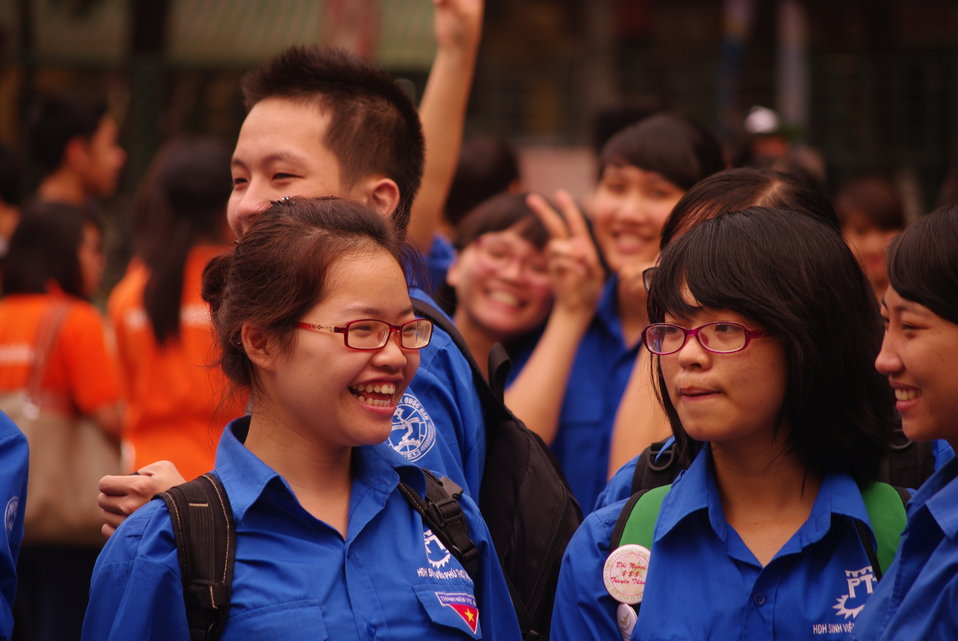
Youth Union Members at the World TB Day Event in Hanoi

March 23, 2013